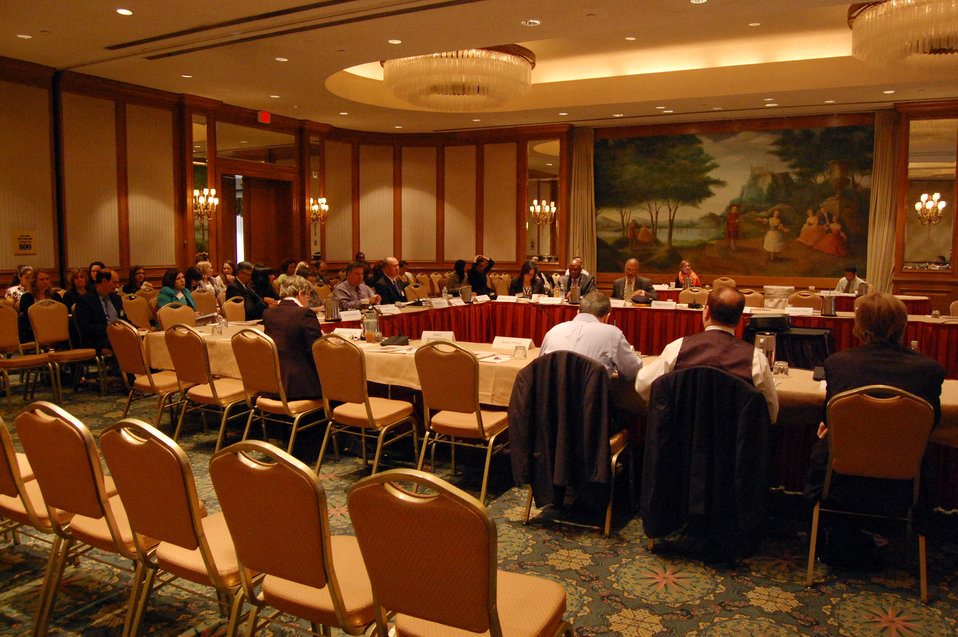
PACHA conf037